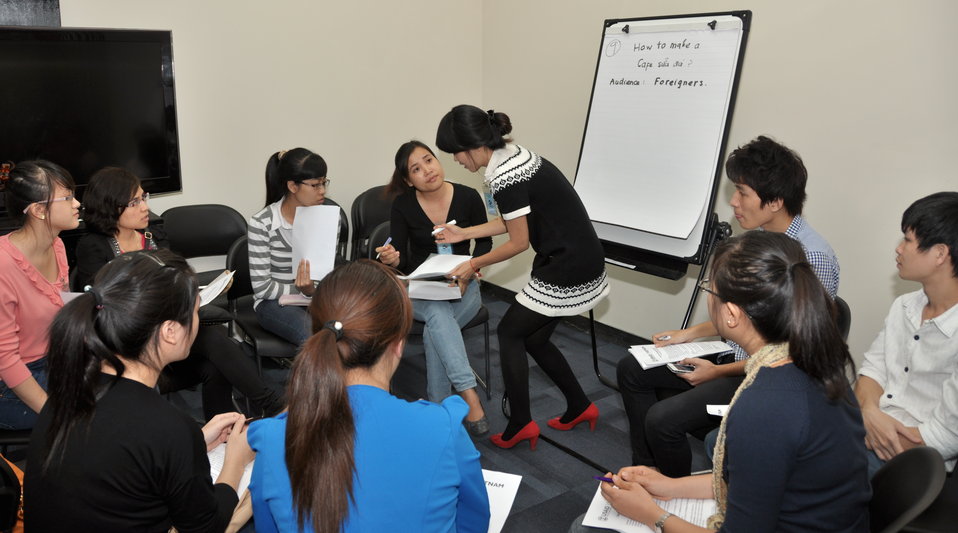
Students join the ‘USAID and Higher Education in Vietnam’ talk

Photo: @USAIDVietnam, November 19, 2012